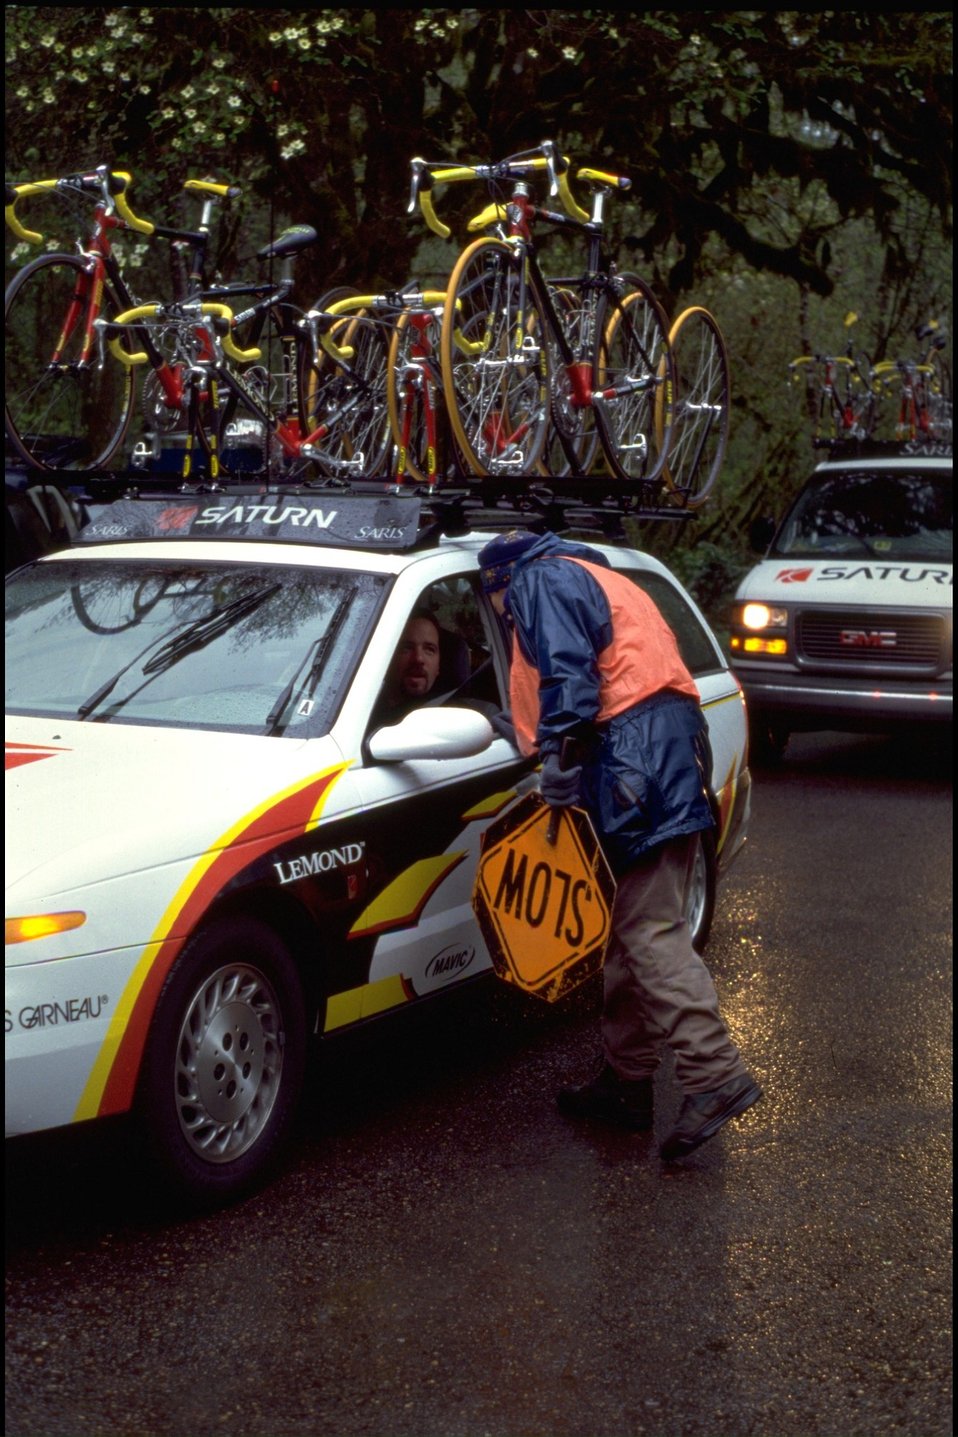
Tour of Willamette.